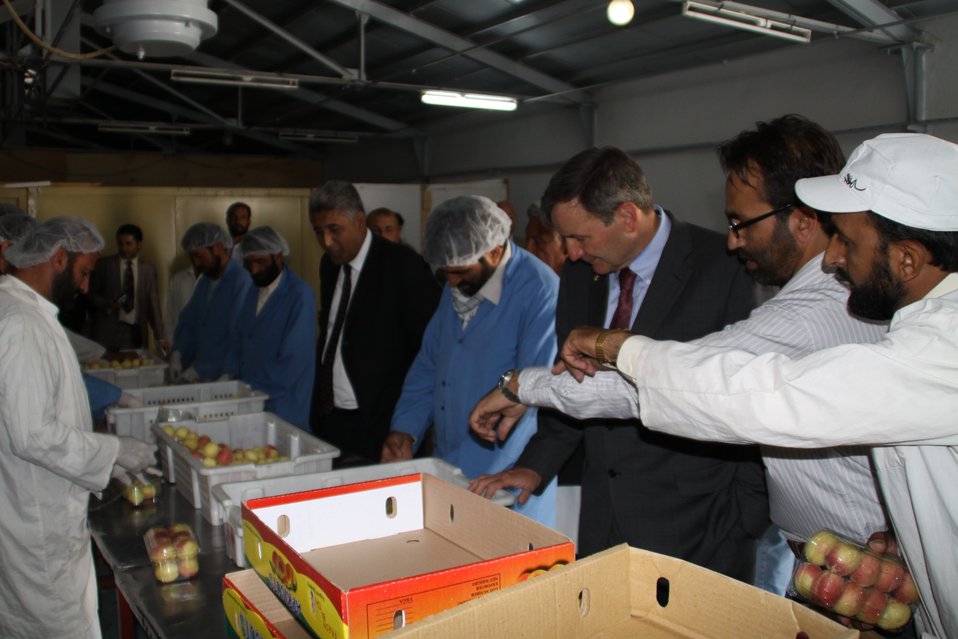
Badam Bagh Farm